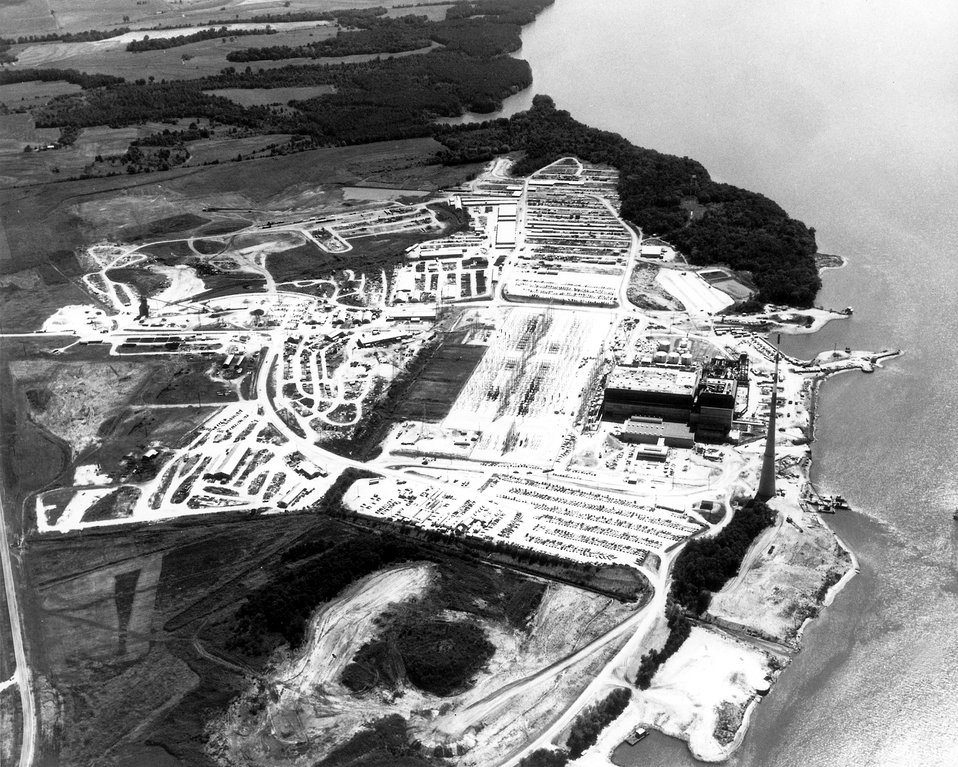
This aerial view of Tennessee Valley Authority's Browns Ferry Nuclear Power Plant located on Wheeler Lake shows the warehouse storage area. Circa 1974.